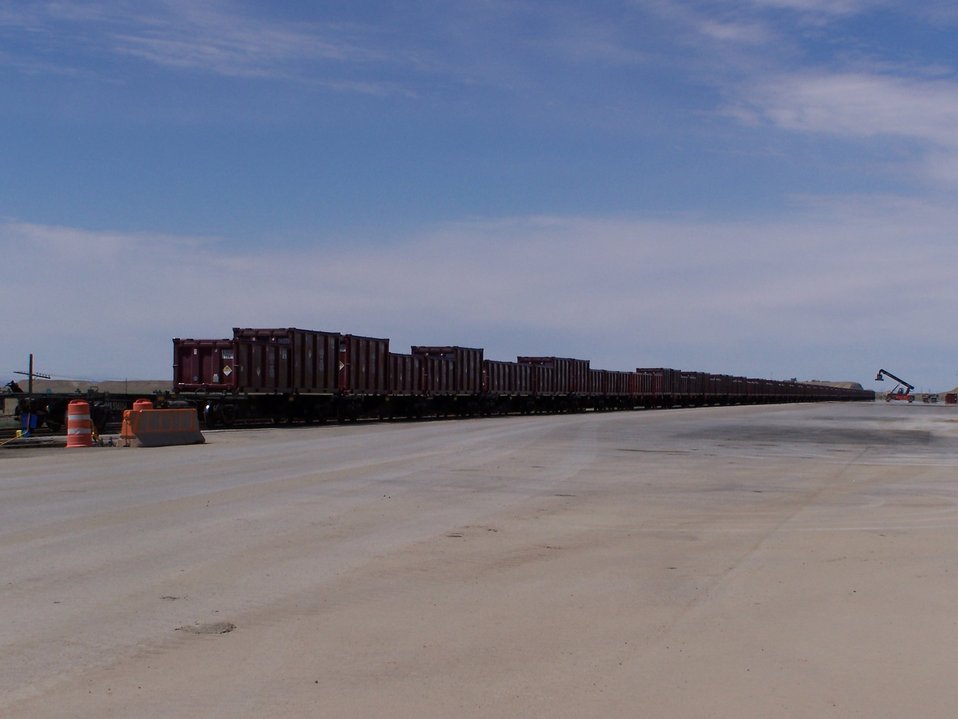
Crescent Junction - mill tailings arrive

Railcars carrying containers of mill tailings are unloaded at the Crescent Junction site.